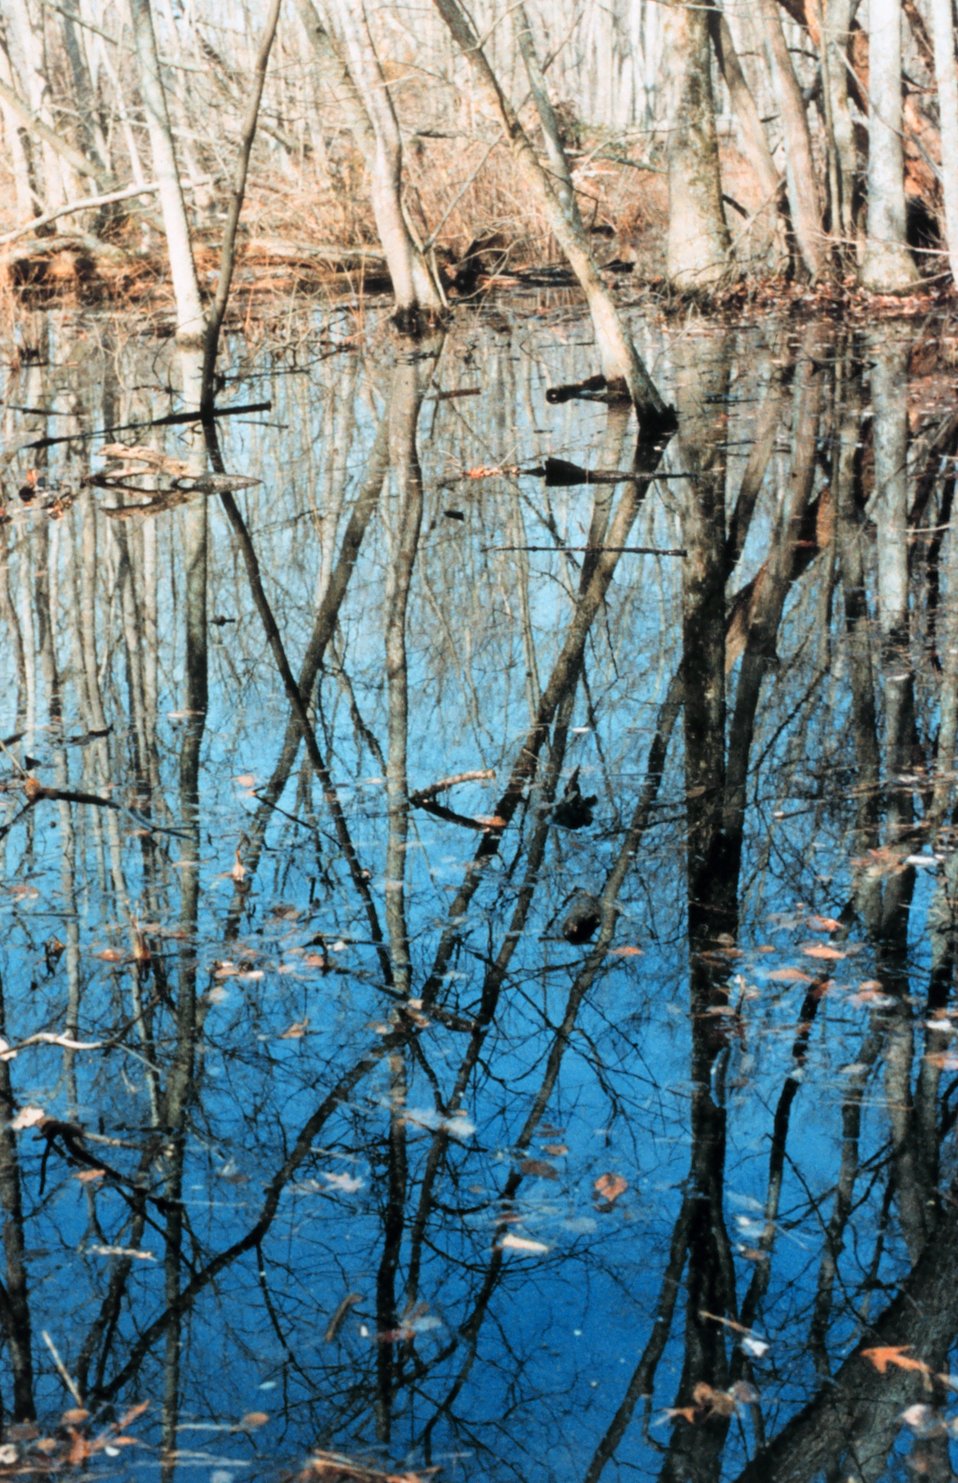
Which way is up? The leaves are in the water and not on the trees. Reflections on a fall afternoon.